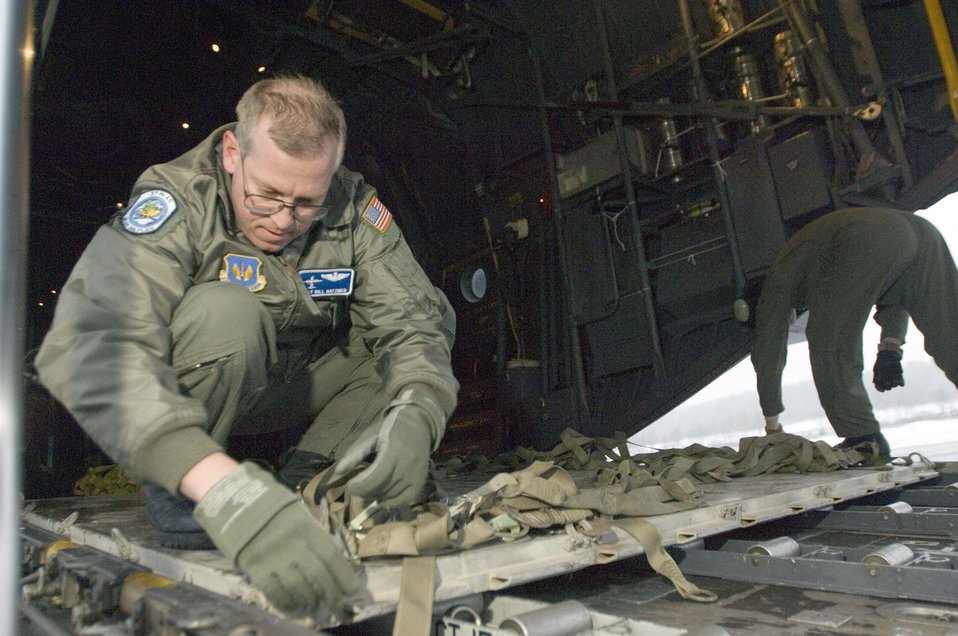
Mission time

GRAFENWOEHR, Germany (AFPN) -- Master Sgt. Bill Gatzmer removes pallet straps on a C-130 Hercules. His crew flew Romanian soldiers and their gear to Grafenwoehr, Germany, for training. Sergeant Gatzmer is a loadmaster with the 37th Airlift Squadron at Ramstein Air Base, Germany.